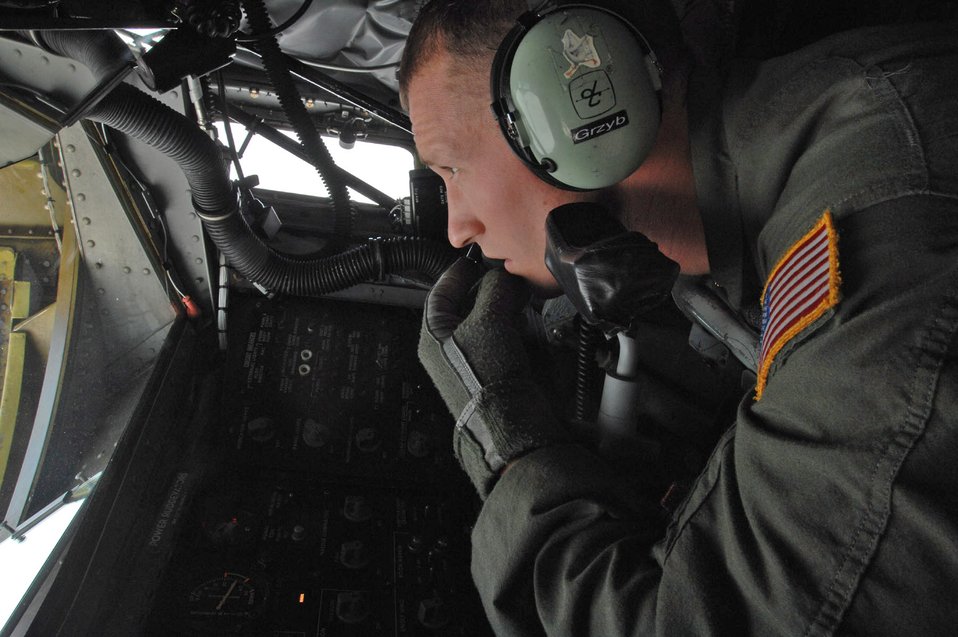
Spangdahlem unit supports NATO AWACS operations

Staff Sgt. Mat Grzyb monitors an E-3 Sentry lining up to be refueled by a KC-135 Stratotanker Sept. 13 over Germany. The KC-135 is from the Wisconsin Air National Guard at Gen. Mitchell International Airport in Milwaukee. The plane can deliver about 1,000 gallons of fuel per minute, carry up to 200,000 pounds of fuel, 83,000 pounds of cargo and provide air refueling to all branches of service and our allies. Sergeant Grzyb is a boom operator assigned to the 126th Air Refueling Squadron.